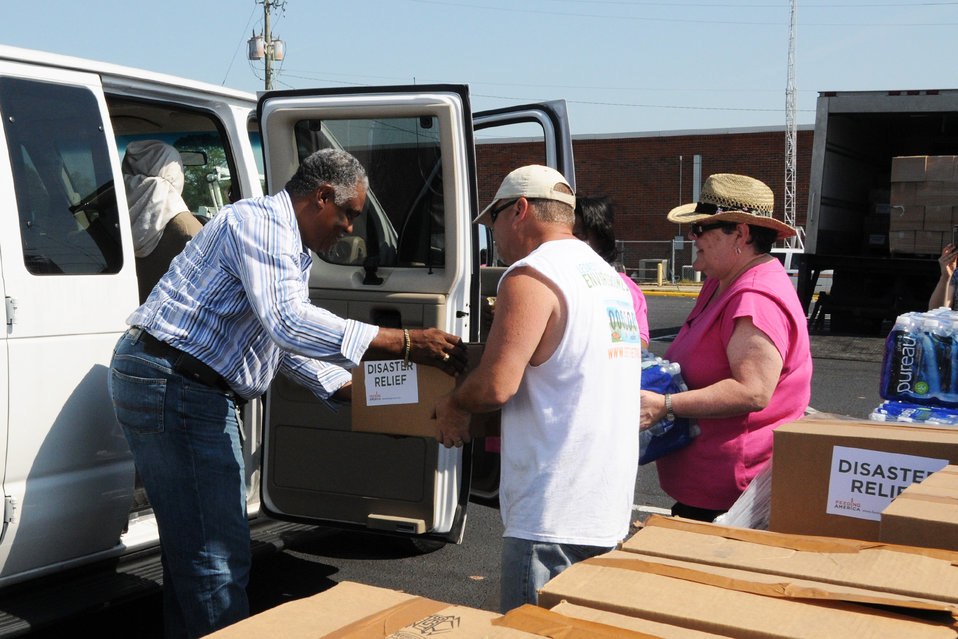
SERO Disaster blog post photo 2

FNS Southeast Regional Administrator Donald Arnette (far left) pitches in with West Alabama Food Bank workers at a make-shift food bank on May 11, handing out disaster food assistance in a Publix parking lot in Tuscaloosa, Ala., after tornadoes hit the area in April.